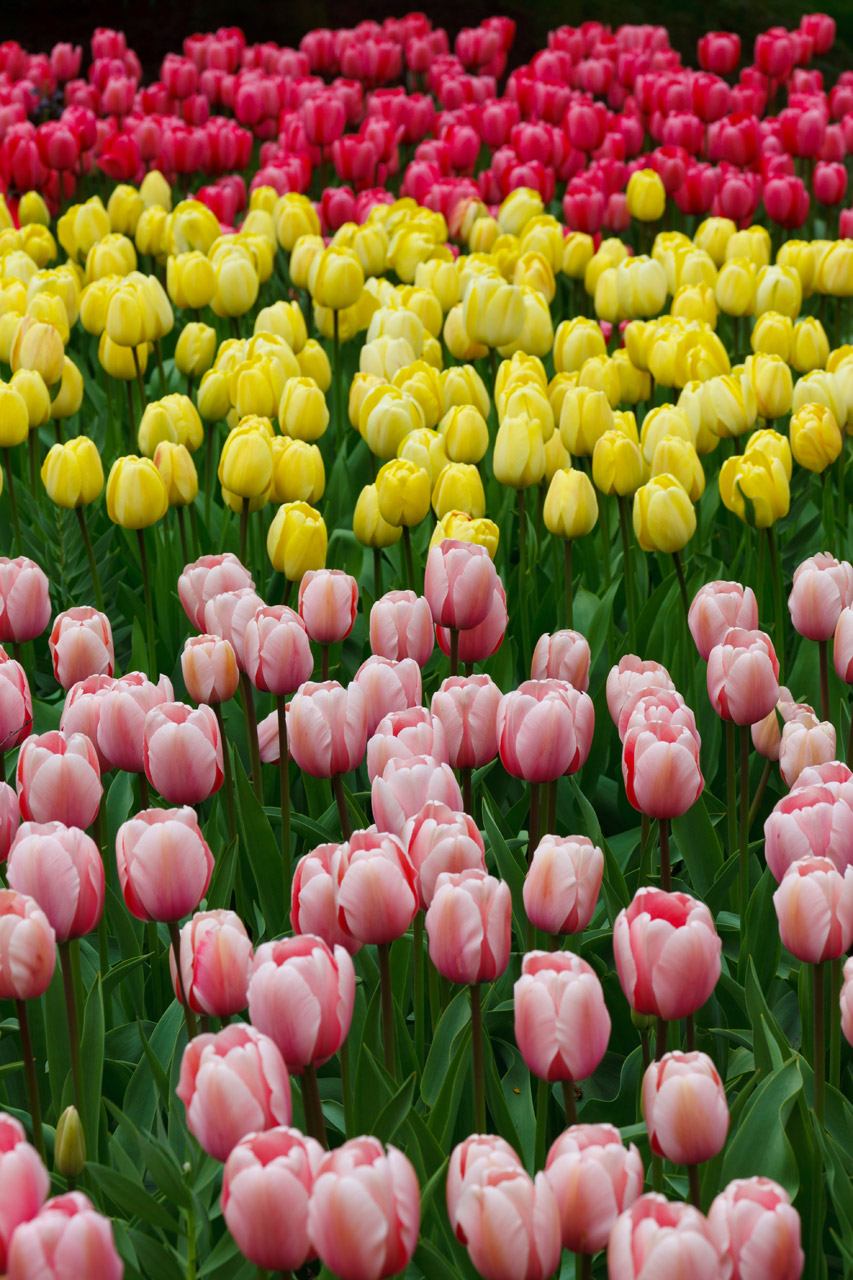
Pink yellow and red tulips in rows.